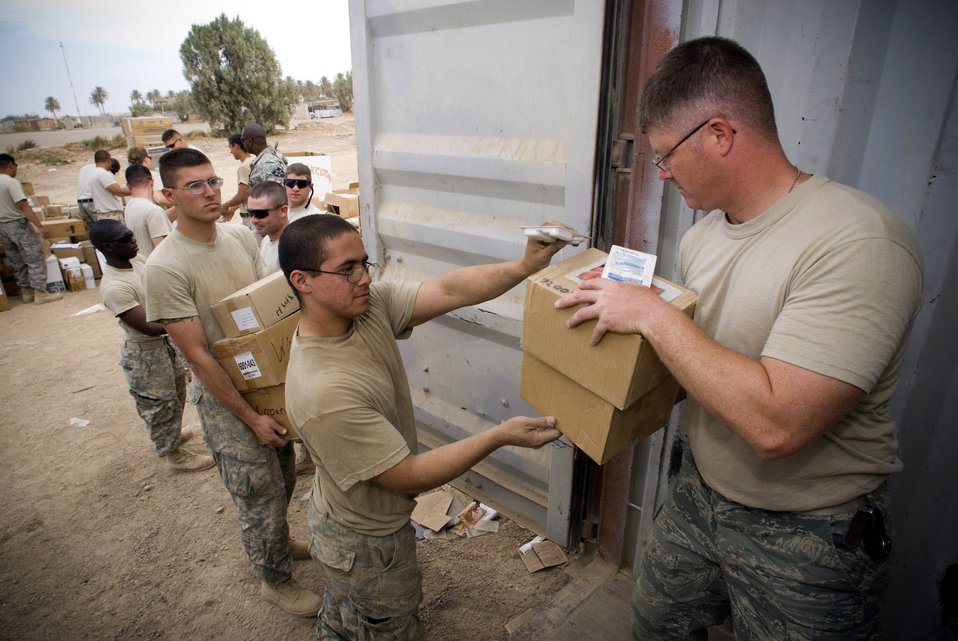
Mobile readiness team supports Army in Iraq

Airmen from Material Recovery Team III with the 732nd Expeditionary Logistics Readiness Squadron and Soldiers from 1st Battalion 9th Infantry Regiment unload a container express Oct. 19 at Camp Corregidor, Iraq. Serviceable assets recovered from the container express are inventoried and redistributed to Army units throughout Iraq. Airmen of various career fields volunteer to augment the Army in nontraditional